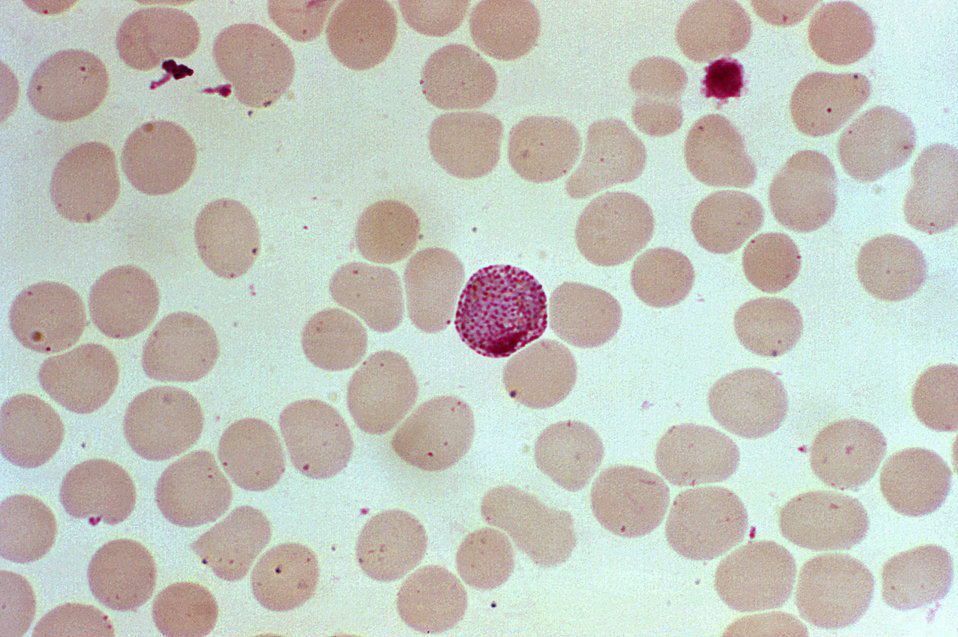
This photomicrograph of a blood smear contains a macrogametocyte of the parasite Plasmodium vivax .